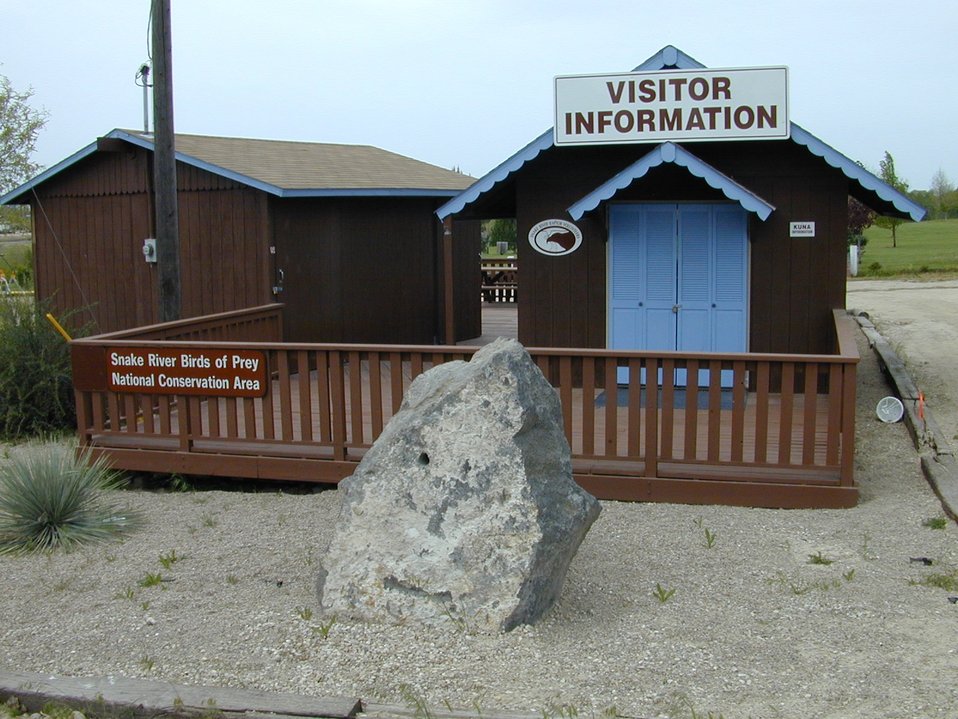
Environmental Education Fire Workshop Timberline High School Fall 2000